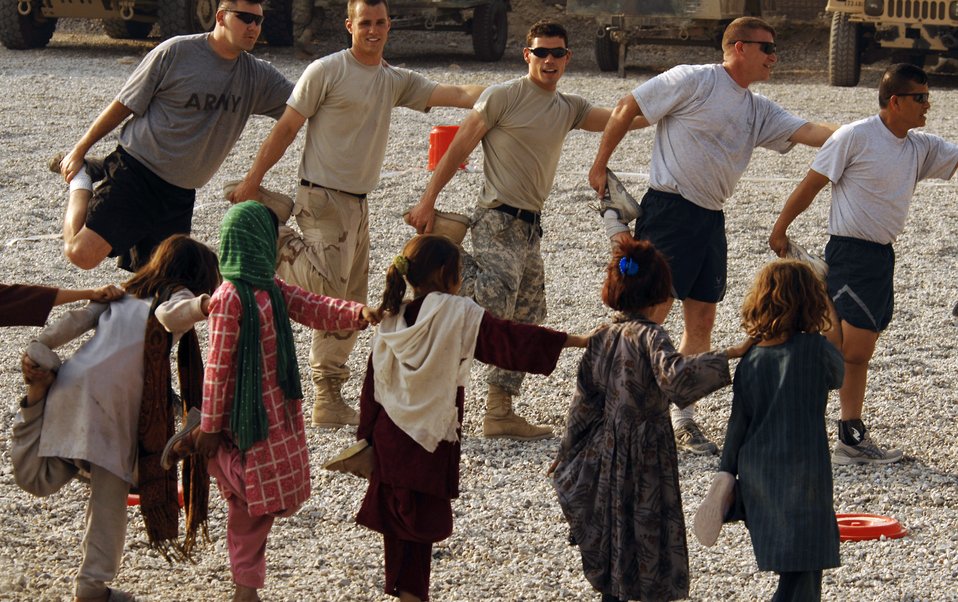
Having a ball

Army and Air Force members from the Nangarhar Provincial Reconstruction Team and Afghan children stretch before they play soccer together Nov. 9 at the PRT forward operating base in Jalalabad, Afghanistan. The Nangarhar PRT is a joint team of Airmen, Soldiers and representatives from the U.S. Department of State, U.S. Agency for International Development and the U.S. Department of Agriculture. The team is responsible for helping the Islamic Republic of Afghanistan government improve security, governance and promote reconstruction in the Nangarhar Province. PRT members assess community needs and then builds schools, government centers, roads, medical capability and basic infrastructure throughout Nangarhar. Unit members also mentor Afghan government officials and security forces to provide the Afghan people with the state representation and security they need.